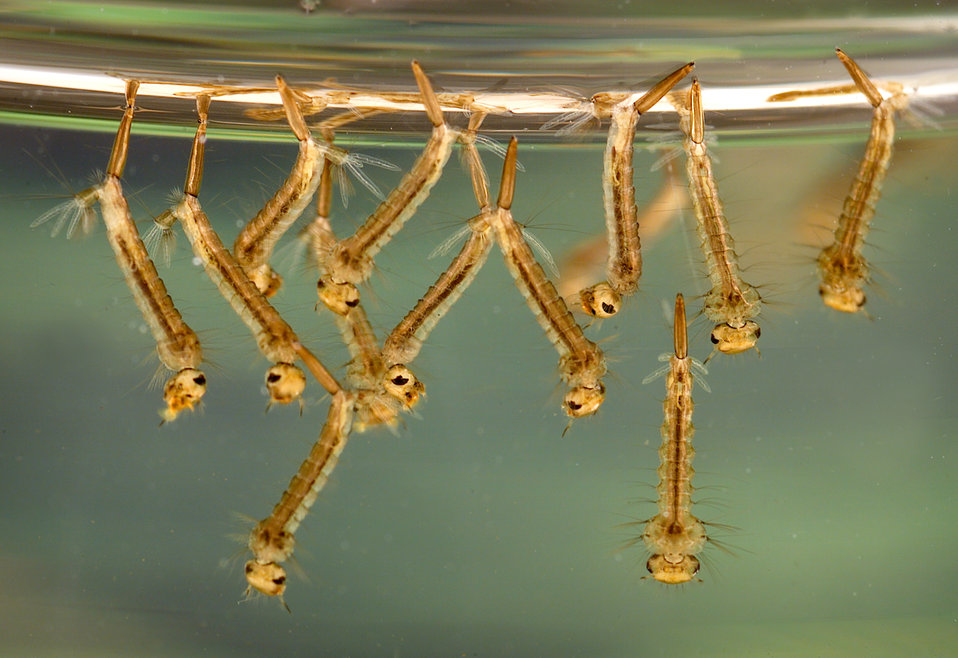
Close-up of Culex mosquito larvae in water

Culex mosquito larvae found collecting in standing water in an Atlanta, Georgia residential area.